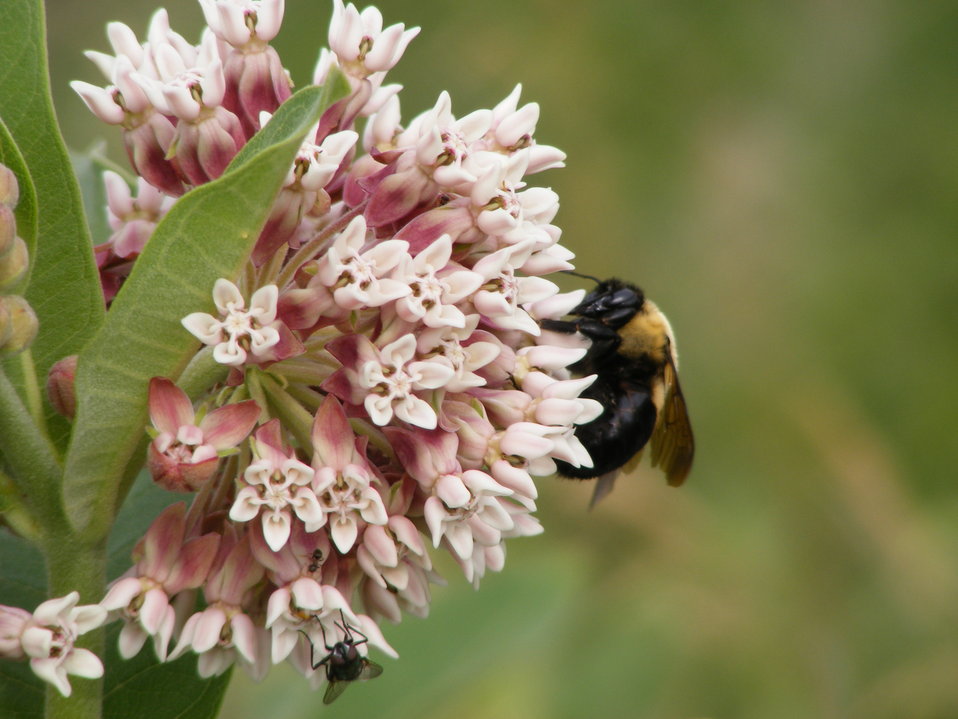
Busy Bee

Wildlfowers like this milkweed are vital sources of nectar and pollen for bees, butterflies and other insects. Native prairie can have hundreds of species of flowers that bloom at different times providing food and habitat throughout the spring, summer, and fall. Photo taken on a Waterfowl Production Area in Waubay Wetland Management District in SD.